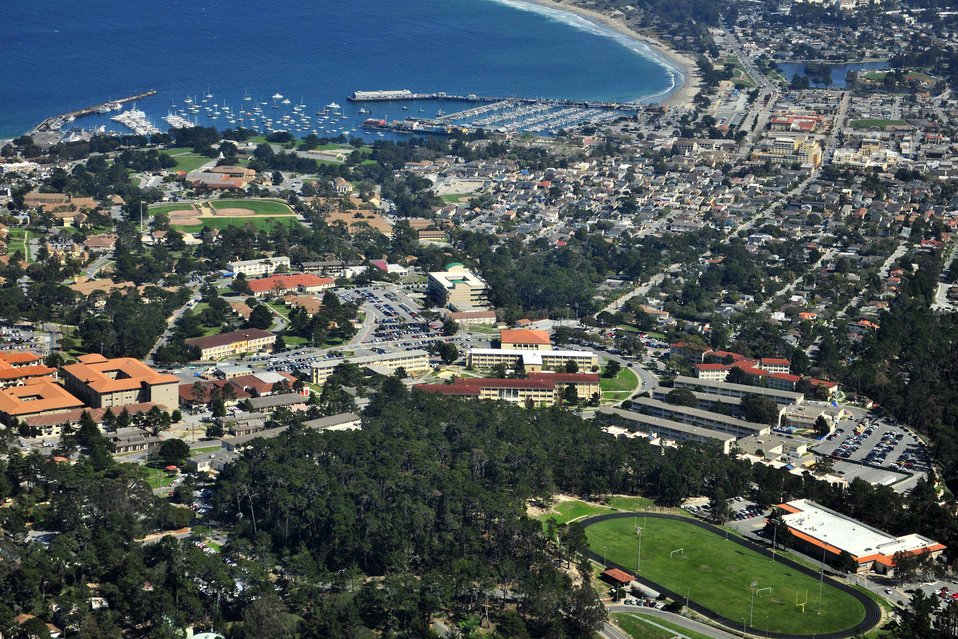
Corps manages vital projects at Presidio

An aerial view shows the Presidio of Monterey located in Monterey, Calif., March 17, 2014. The Presidio is home to the Defense Language Institute and Foreign Language Center, training the active and reserve Army, Air Force, Navy and Marines as well as civilian personnel working in the federal government and various law enforcement agencies. The U.S. Army Corps of Engineers Sacramento District manages construction on several major projects at the Presidio of Monterey. The program incorporates the latest energy and water conservation technologies in order to operate more efficiently and in a sustainable, environmentally friendly manner.